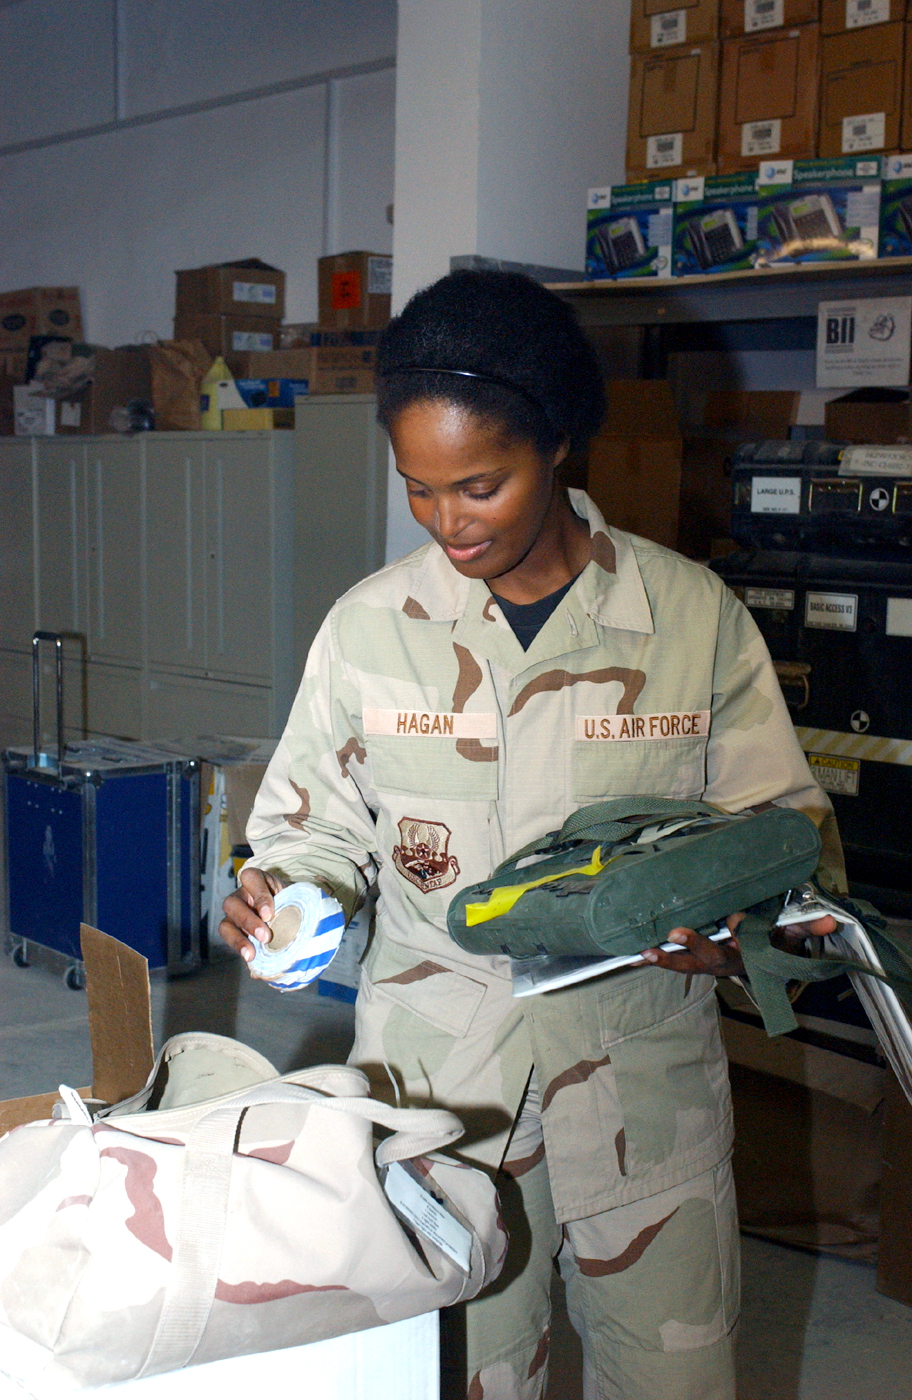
Communication focal point provides one-stop service

Staff Sgt. Cidelia Hagan checks kits during an inventory at Ali Base, Iraq, on Monday, June 12. She is assigned to the 407th Expeditionary Communications Squadron communication focal point.